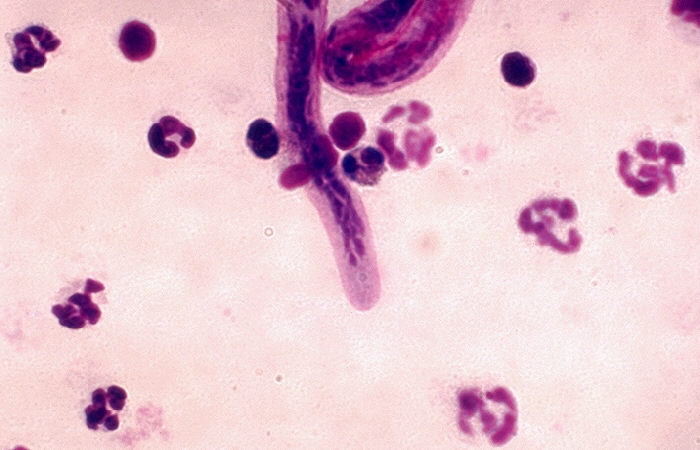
Brugia malayi, agent of filariasis. Anterior end. Parasite.